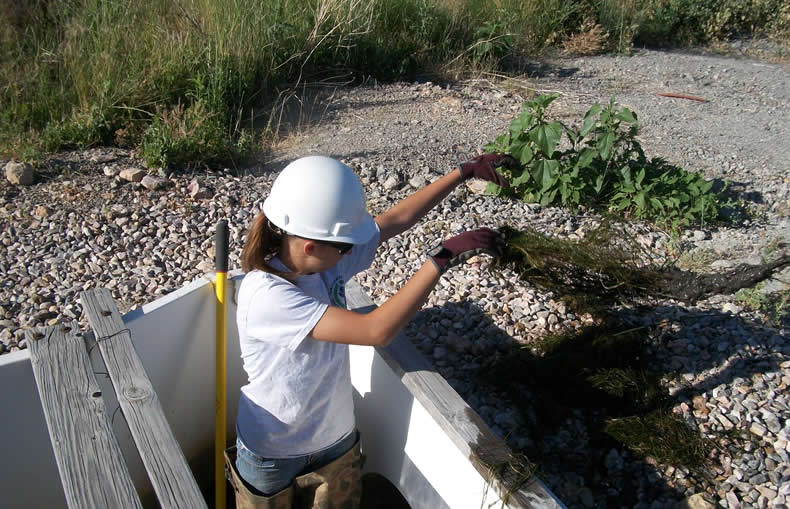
Removing invasive weeds

Youth Conservation Corps participant removes weeds from a water control structure at Bear River Migratory Bird Refuge.